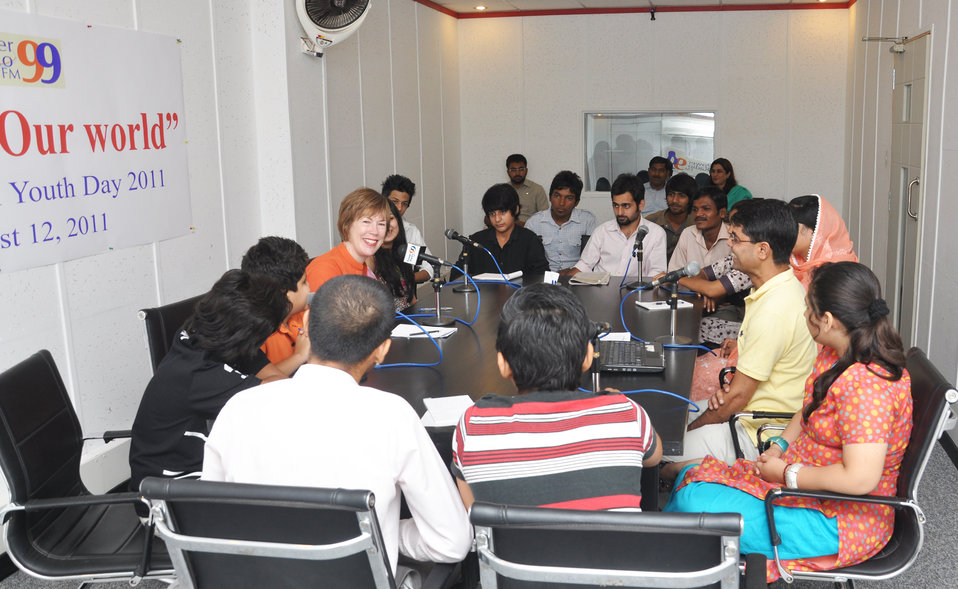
International Youth Day 2011

Islamabad, August 12, 2011 – Dr. Marilyn Wyatt, wife of U.S. Ambassador Cameron Munter, joined young people for a discussion that marked the international youth day at Power Radio FM 99.